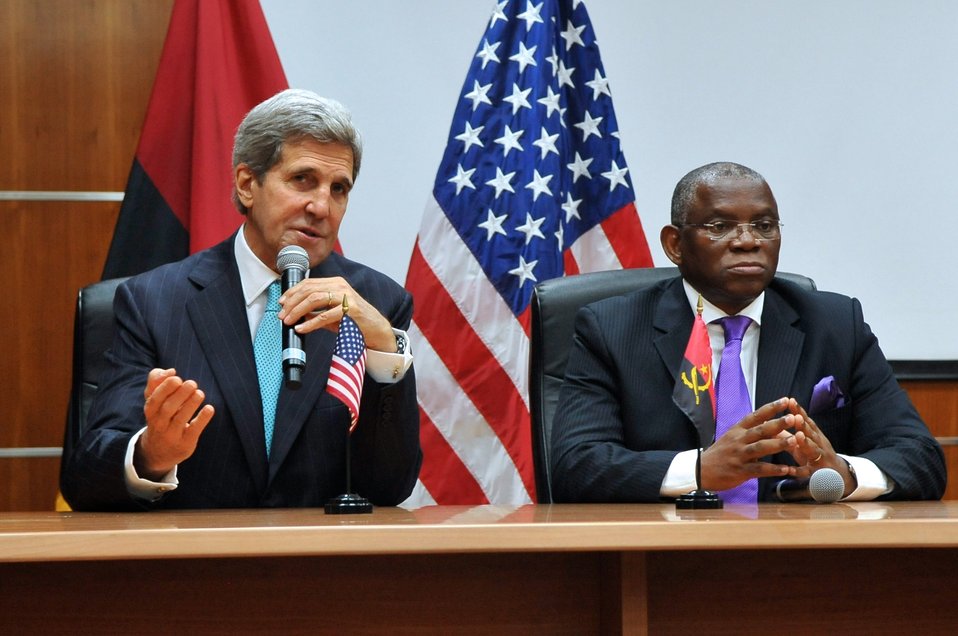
Secretary Kerry Addresses Reporters After Meeting With Angolan Foreign Minister Chikoti

U.S. Secretary of State John Kerry addresses reporters after his bilateral meeting with Angolan Foreign Minister Rebelo Chikoti in Luanda on May 5, 2014.